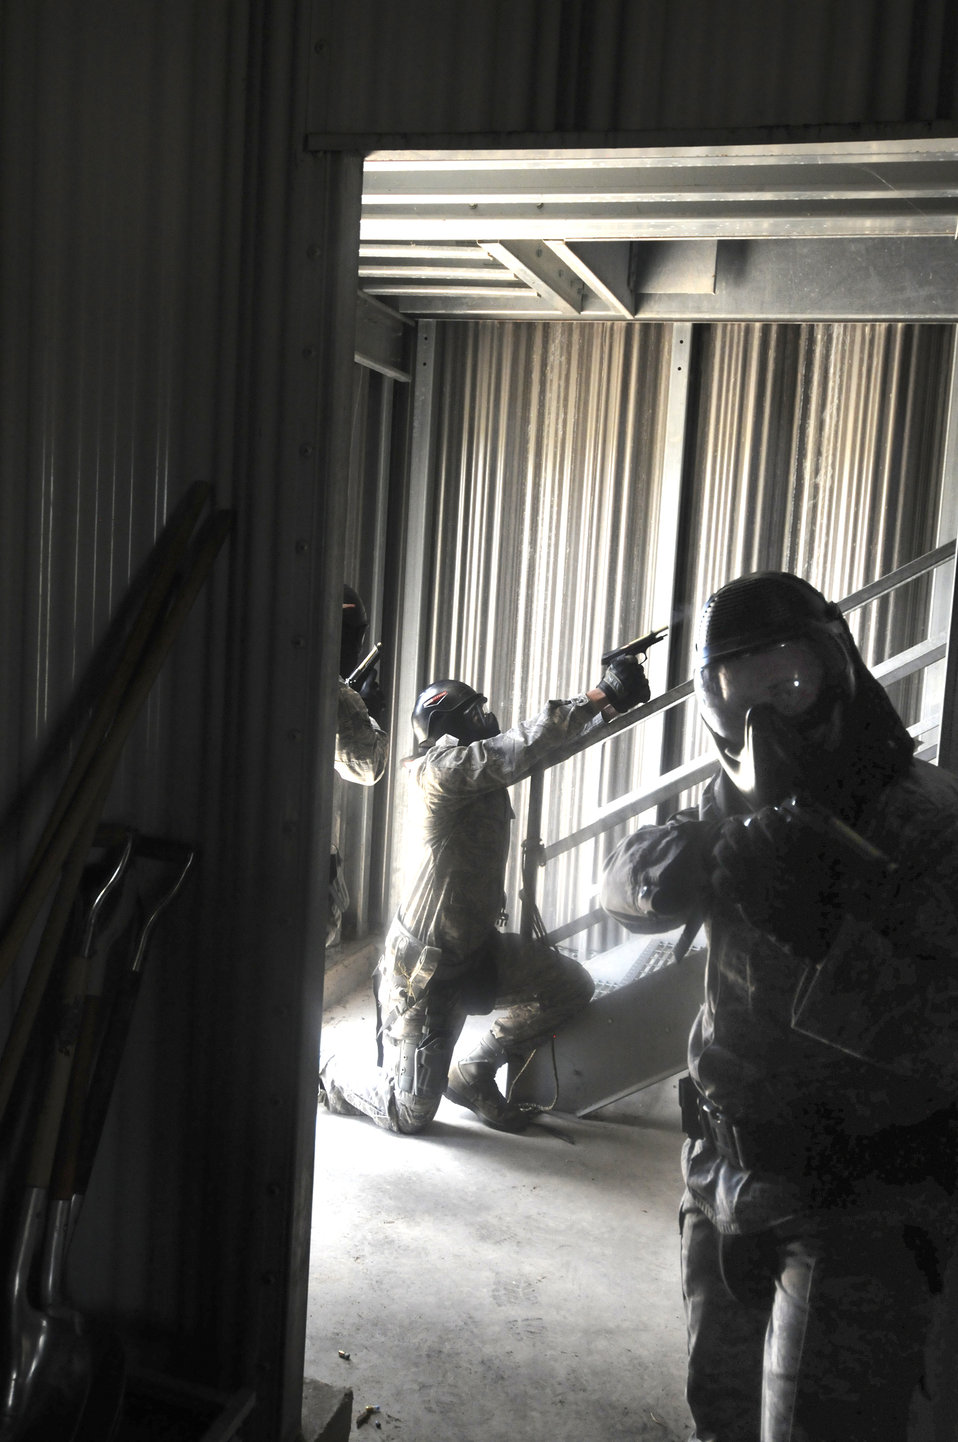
Don't approach

Members from the 902nd Security Forces Squadron train for an active-shooter scenario at Randolph Air Force Base, Texas.